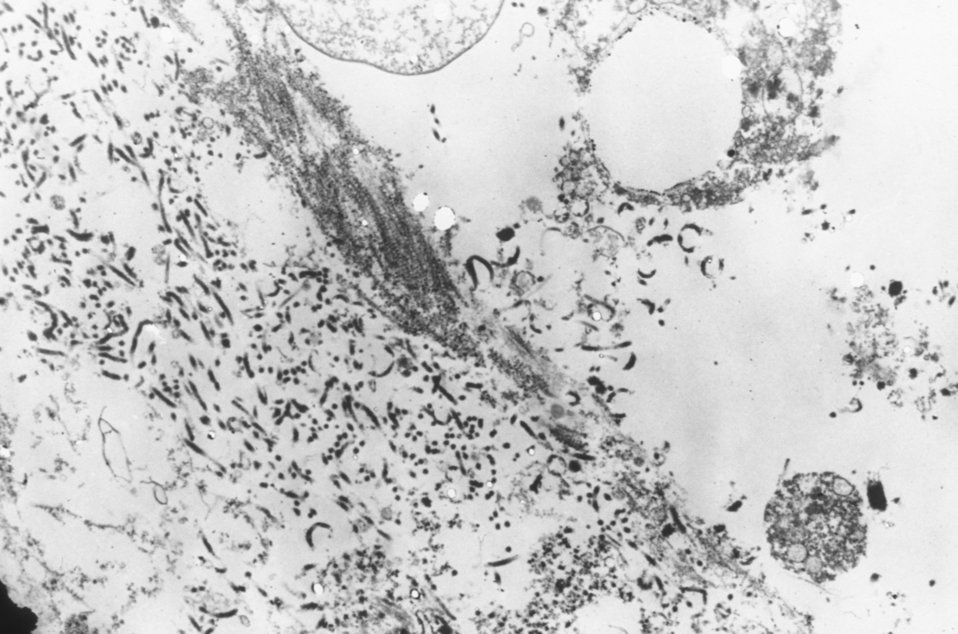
Electronmicrograph shows a thin section containing the Ebola virus, the causative agent for African Hemorrhagic Fever.